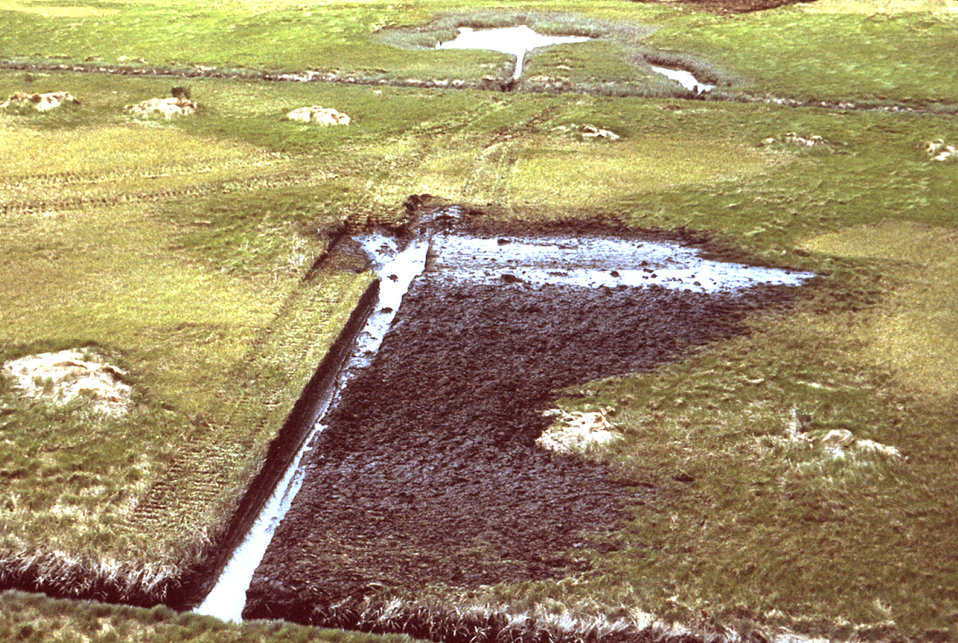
This 1976 aerial photograph of a New Jersey salt marsh, shows how this region had been traversed by a network of ditches excavated in what is known as a 'radial ditching' pattern in order to provide adequate water drainage.